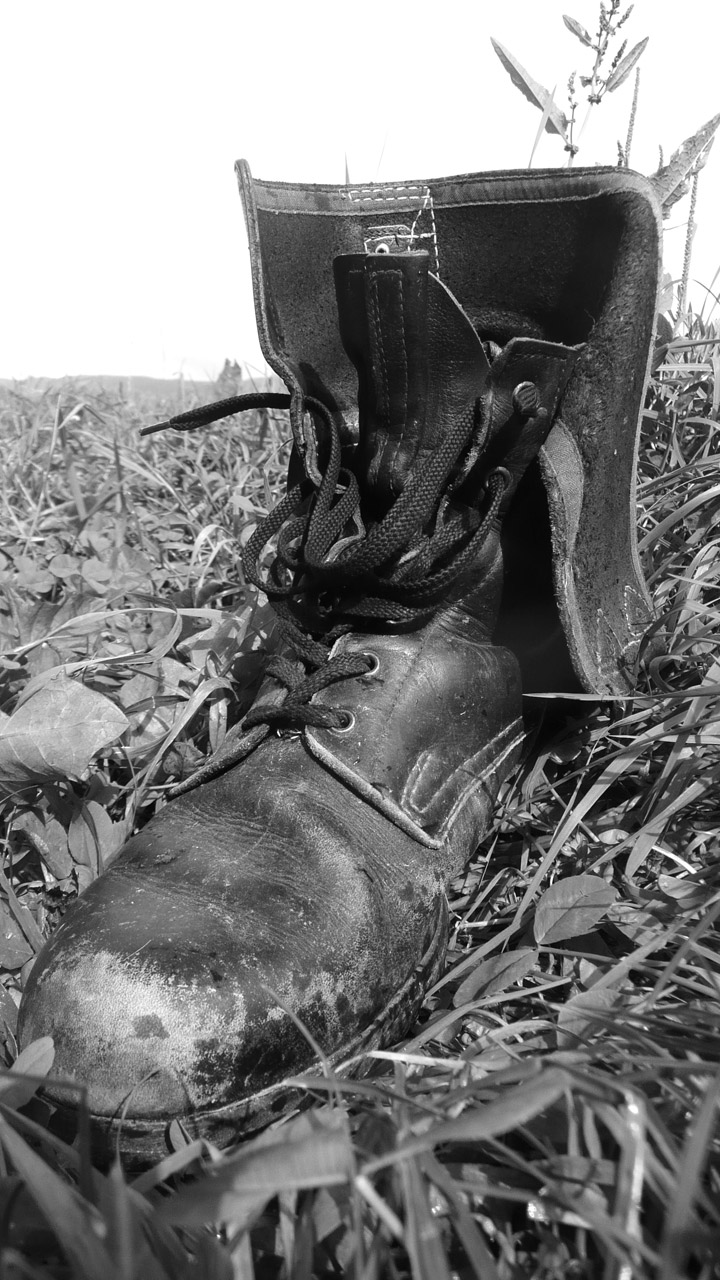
Jackboot, military boot.